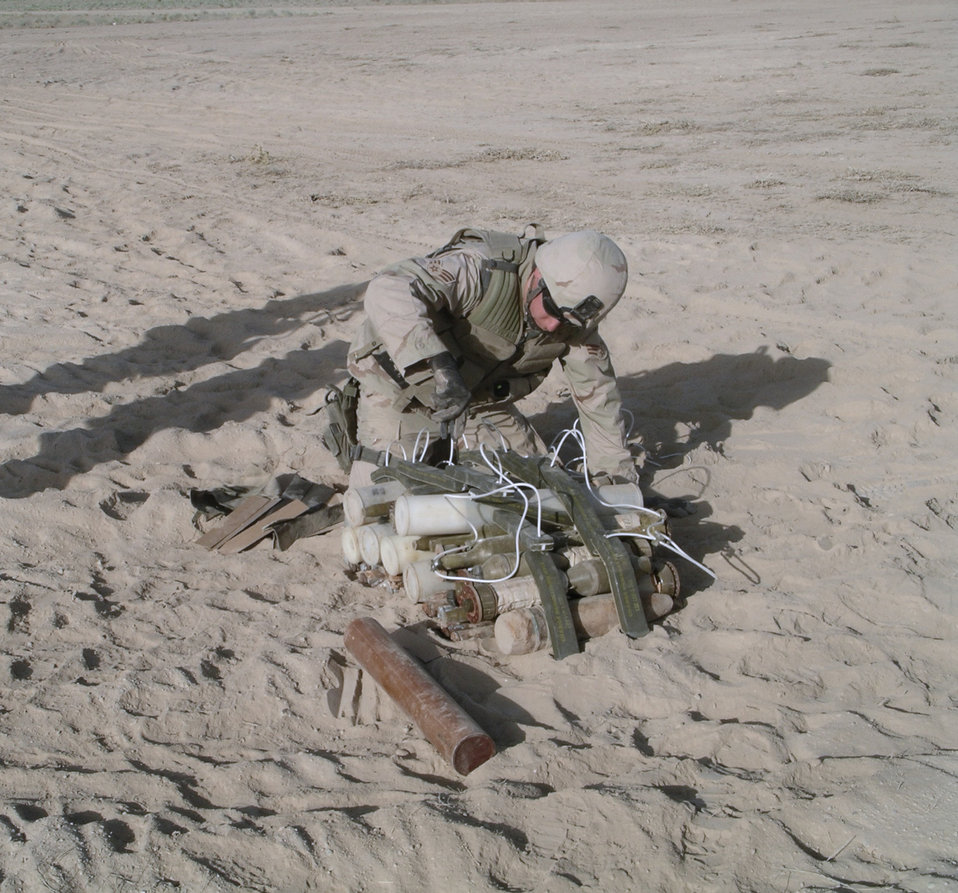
EOD Airmen work to keep Kandahar safe

KANDAHAR AIRFIELD, Afghanistan -- Senior Airman Eric Benbrooks places C-4 explosives on a pile of recovered munitions found in the area in preparation for a controlled detonation. He is assigned to the 451st Air Expeditionary Group's explosive ordnance disposal flight and is deployed from Hickam Air Force Base, Hawaii.